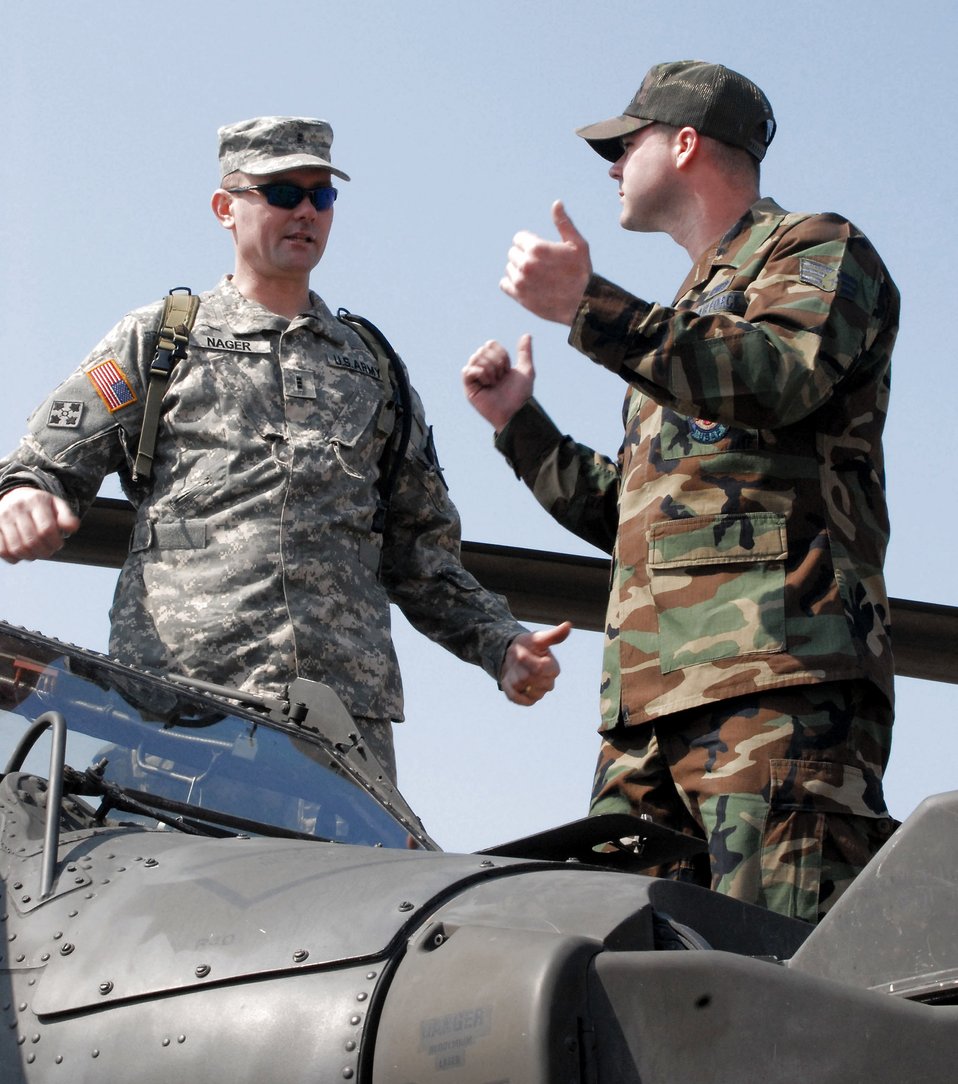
Army shows off Apache at Kunsan

While standing atop an AH64D Apache helicopter, Chief Warrant Officer 3rd Class Pat Nager, a standardization instructor pilot with Charlie Company, 42nd Aviation Battalion from Camp Humphreys, South Korea, answers a question about fire rescue operations from Senior Airman Joshua McGinnis, a firefighter with the 8th Civil Engineer Squadron at Kunsan Air Base, South Korea. Army aviators brought the helicopter to Kunsan March 10 to inform Airmen about the aircraft and the Army's current mission in South Korea.